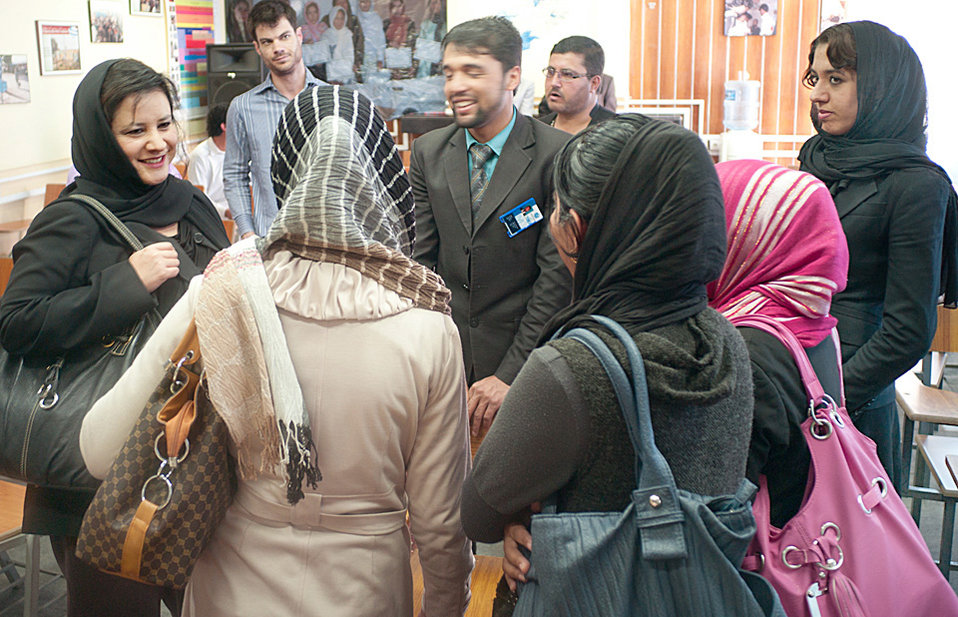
Asta talking to female students